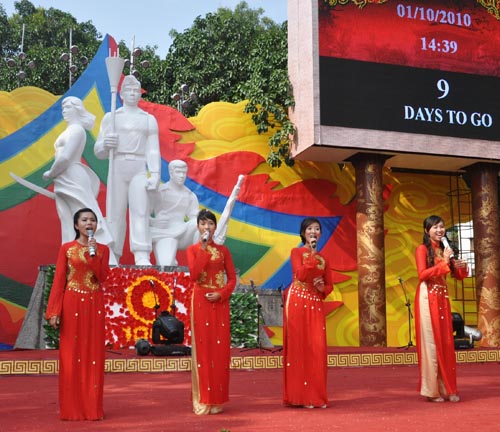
Singers perform during the 1,000-year celebrations in Hanoi, October 2010